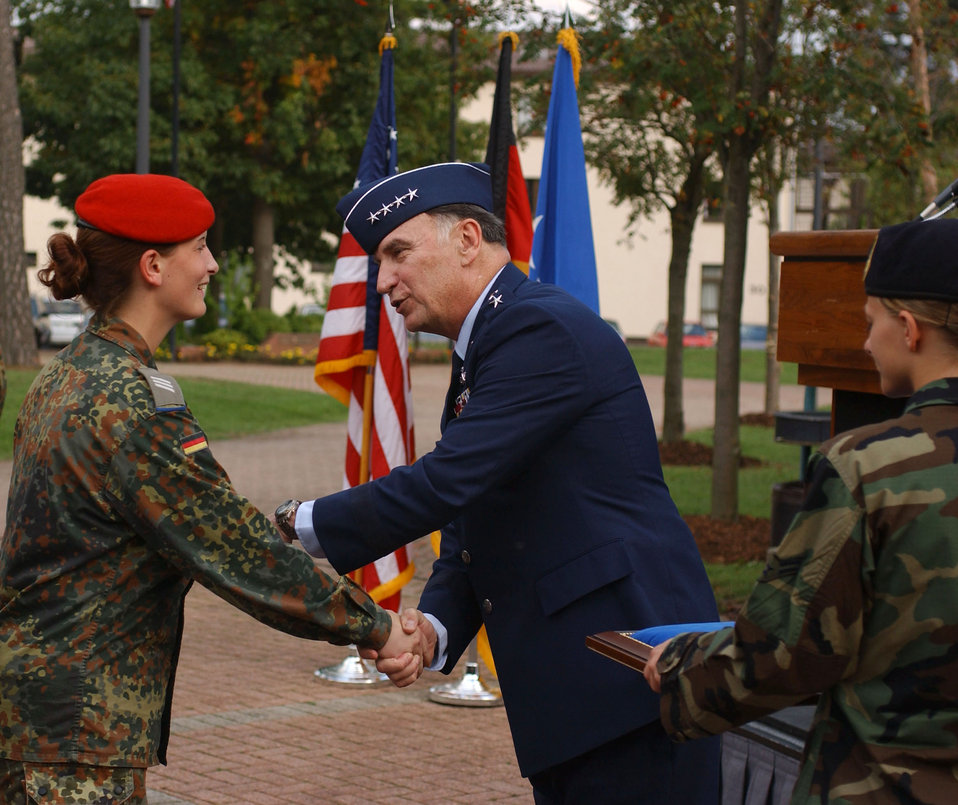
USAFE commander honors German military

Gen. William T. Hobbins, U.S. Air Forces in Europe commander, presents a coin to Pfc. Ricarda Franke of the German Army during a Sept. 28 ceremony honoring the departure of the German Bundeswehr after more than three years of guarding the gates at USAFE bases in Germany.